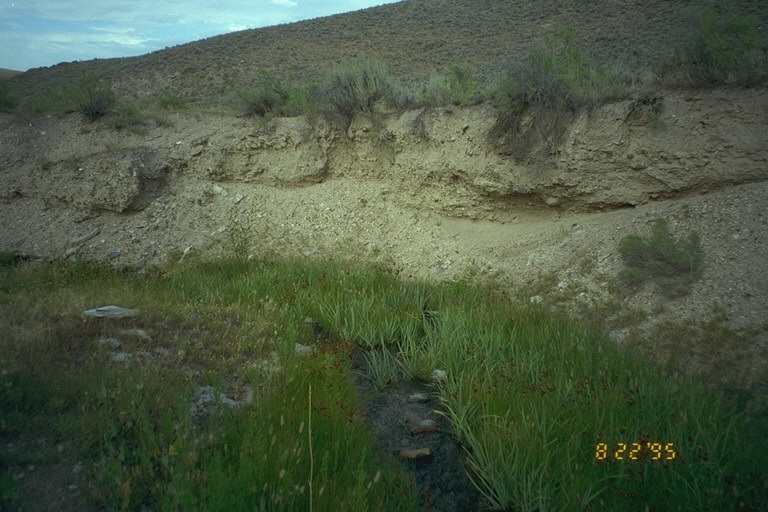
Riparian area Public Lands Salmon Field Office UCSC Upper Columbia Salmon Clearwater District